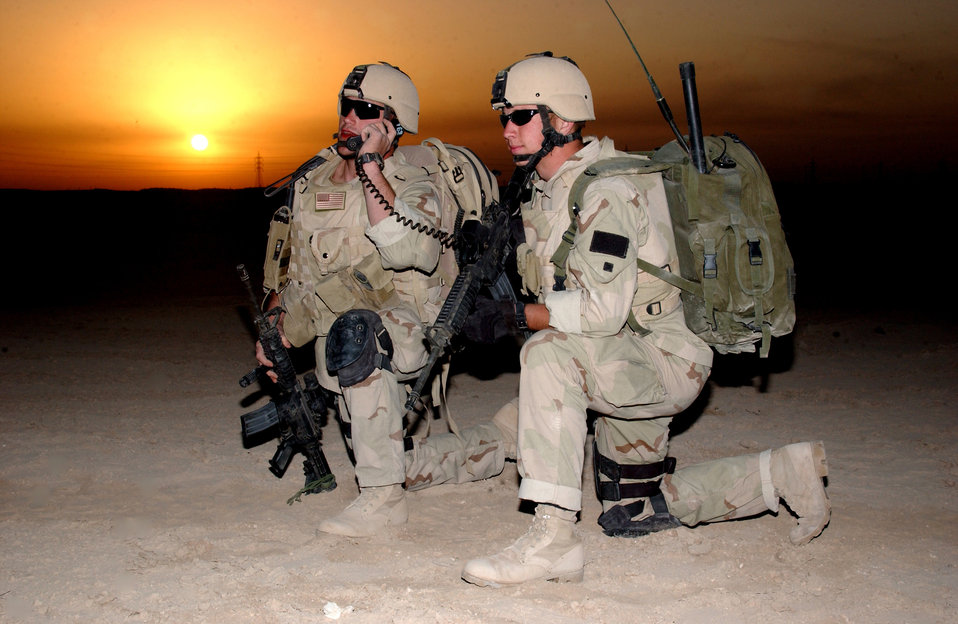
Providing cover

FALLUJAH, Iraq -- Airman 1st Class Kyle Sharp (right) provides cover while Airman 1st Class Christopher Komorek calls in air support during combat operations here Nov. 13. Both Airmen are assigned to the 9th Air Support Operation Group.